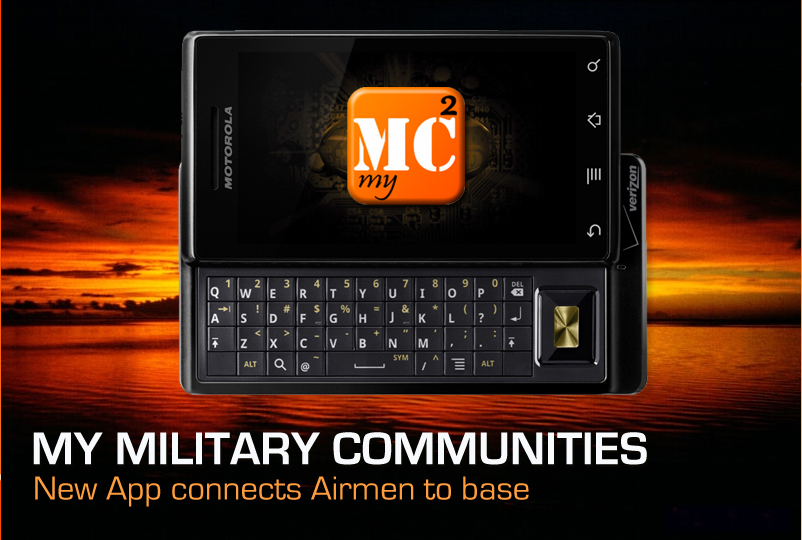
My Military Communities